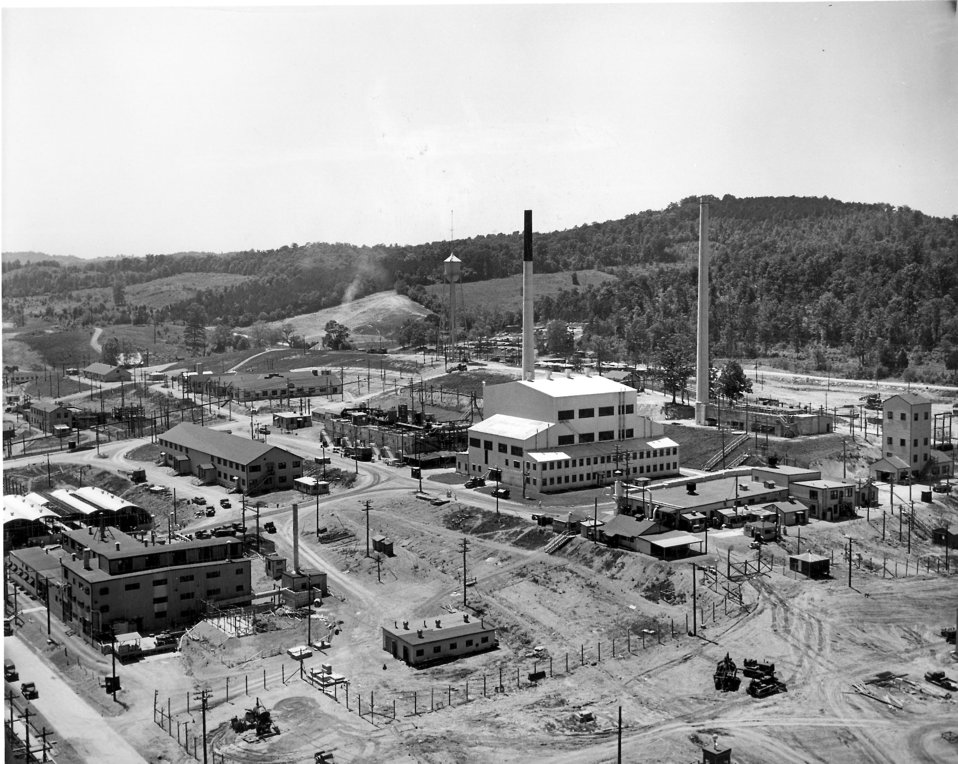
Oak Ridge National Lab.

3537 DOE photo by Ed Westcott 1947